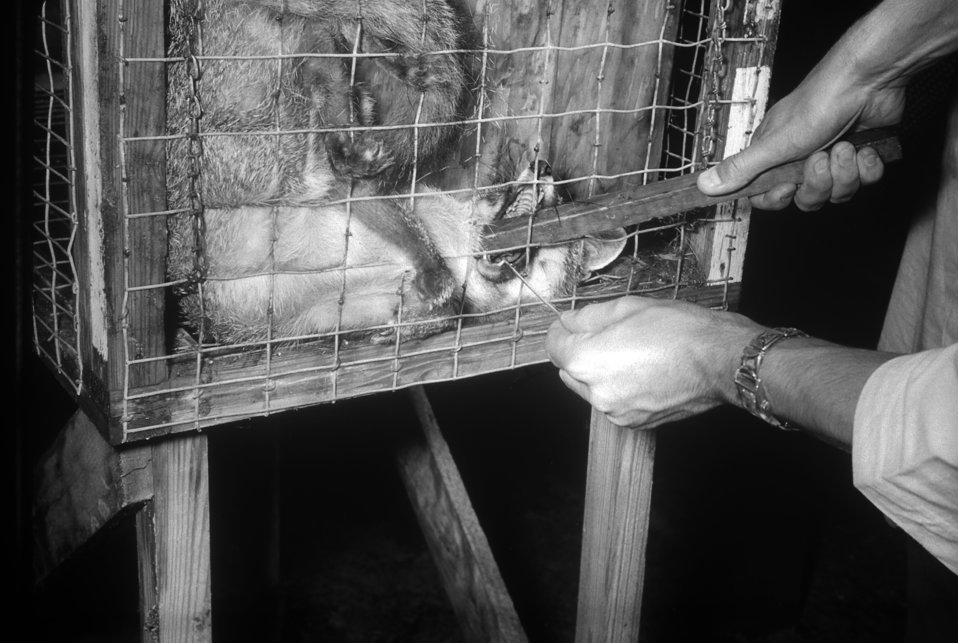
A photograph of a rabid fox in a cage.